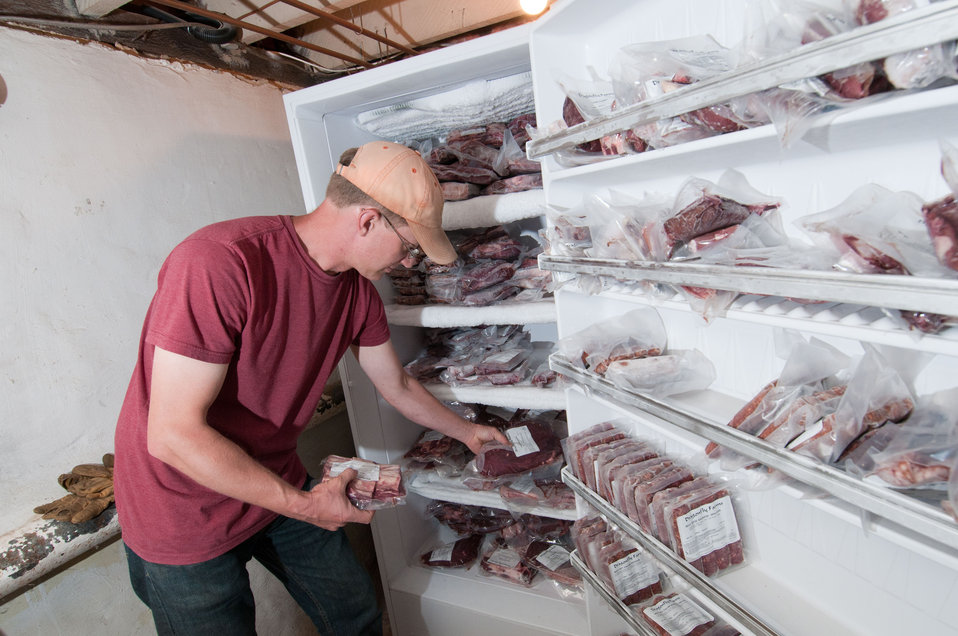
Bruce Johnson, owner of the Dragonfly Farm inventories beef that was produced from his free-range, grass-fed, and very stress-free cattle in Beaverdam, VA, on Friday, May 6, 2011. Dragonfly and other farms produce meat products that are listed and ordered on Lulus Local Food website. The products are distributed with the help of other suppliers participating with Fall Line Farms Food Hub. Together, they offer a wide variety of household food staples and specialty items. Members pick their customized orders from an ever changing seasonal inventory of fruits, vegetables, meats, soaps, eggs, cheeses, flowers, honey, pastas, sauces, syrups, baked goods, mushrooms, flour and grains from the Richmond, VA area.